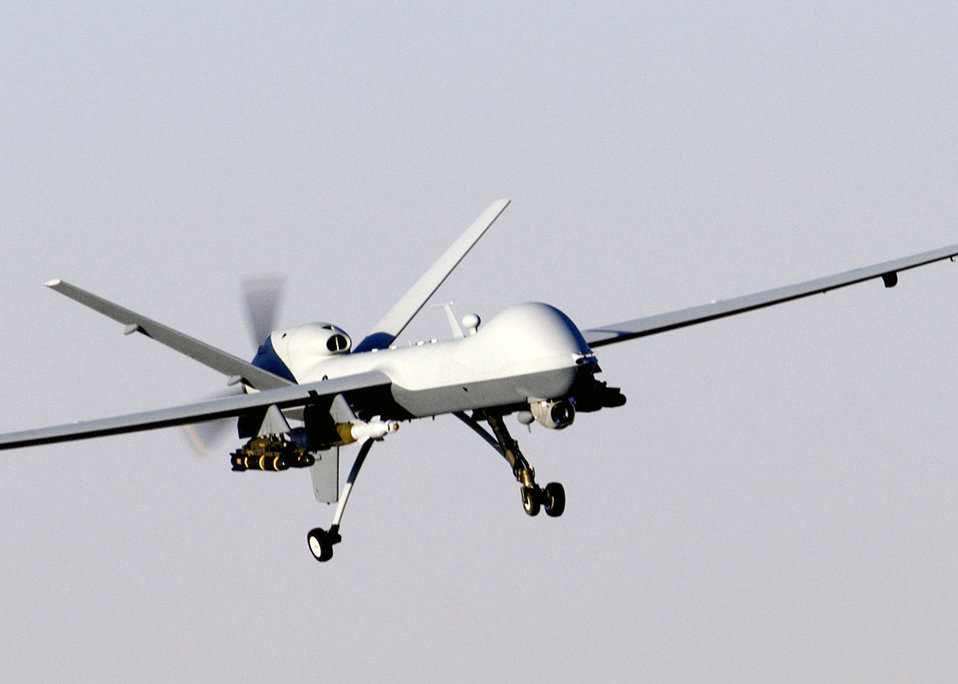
July 24 airpower summary: Reaper stops enemy attack

A MQ-9A Reaper unmanned aerial vehicle prepares to land after a mission in support of Operation Enduring Freedom in Afghanistan. The Reaper has the ability to carry both precision-guided bombs and air-to-ground missiles.